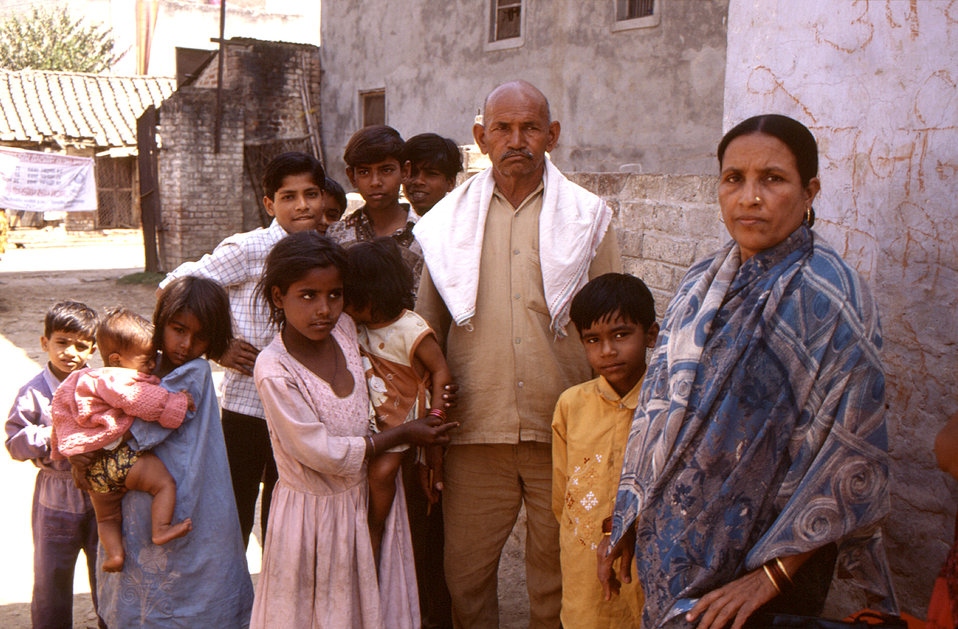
This 2000 photograph, provided by Chris Zahniser, B.S.N., R.N., M.P.H., depicted a typical Indian family that the Centers for Disease Control's Stop Transmission of Polio (STOP) team members met while on their polio eradication campaign assignments. As a STOP team member and photographer, Chris was assigned to the state of Uttar Pradesh in northern India, and spent three months working in the Districts of Gorakhpur and Deoria.